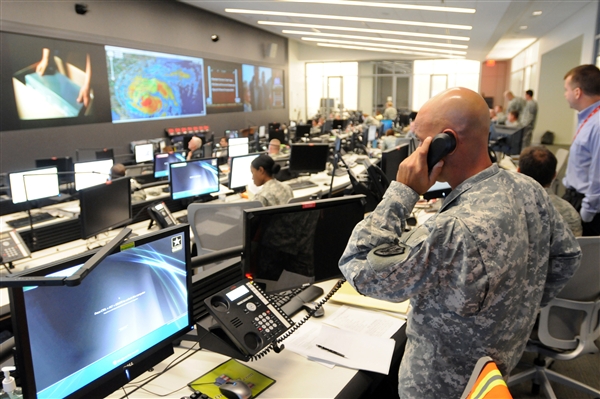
Hurricane Irene

With about 101,000 National Guard members ready to assist eastern seaboard states in Hurricane Irene’s path, the National Guard Command Center in Arlington, Va., seen here Aug. 26, 2011, is monitoring the storm and National Guard support to civilian authorities around the clock.